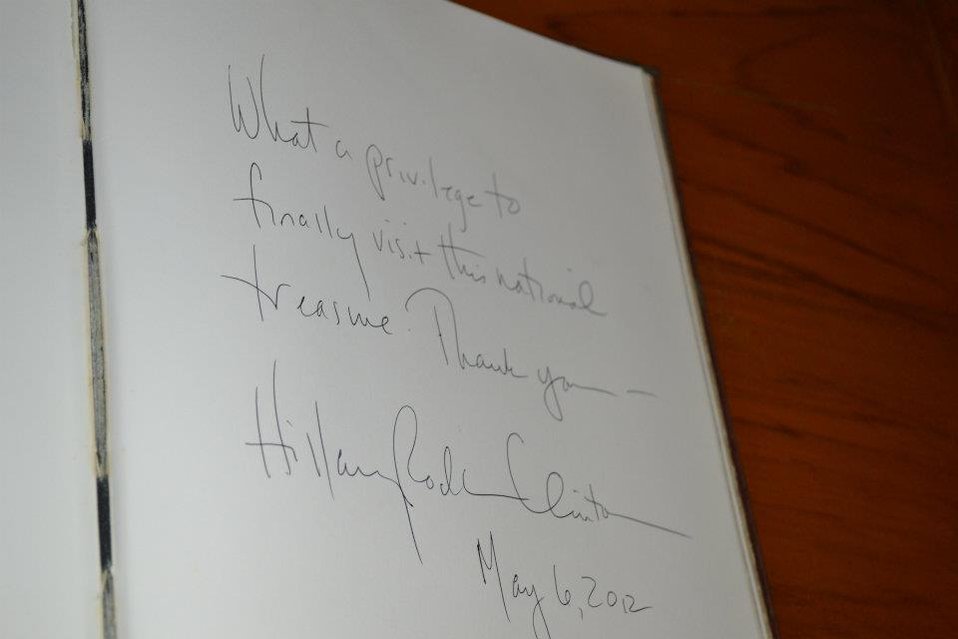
Secretary Clinton Signs the Guestbook

U.S. Secretary of State Hillary Rodham Clinton signs the guestbook at the Victoria Memorial Hall in Kolkata, India, on May 6, 2012.